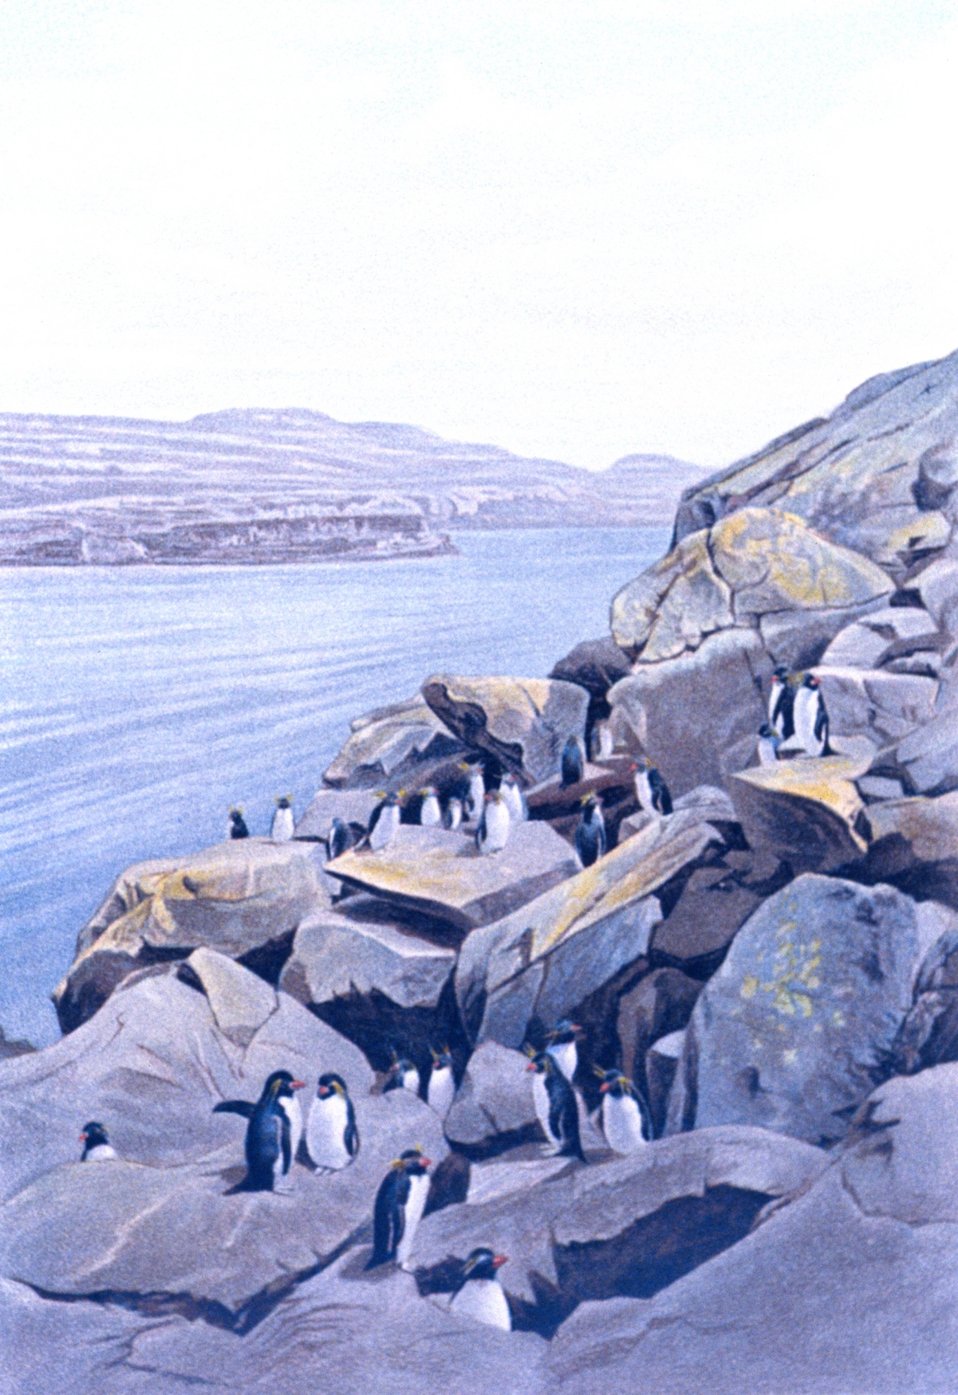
Rockhopper penguin colony at the entrance to Gazelle Harbor, Kerguelen Island. Eudyptes chrysocome filholi. Water color by F. Winter. In: 'Aus den Tiefen des Weltmeeres' by Carl Chun, 1903. Call No. Q115.V15 1903.